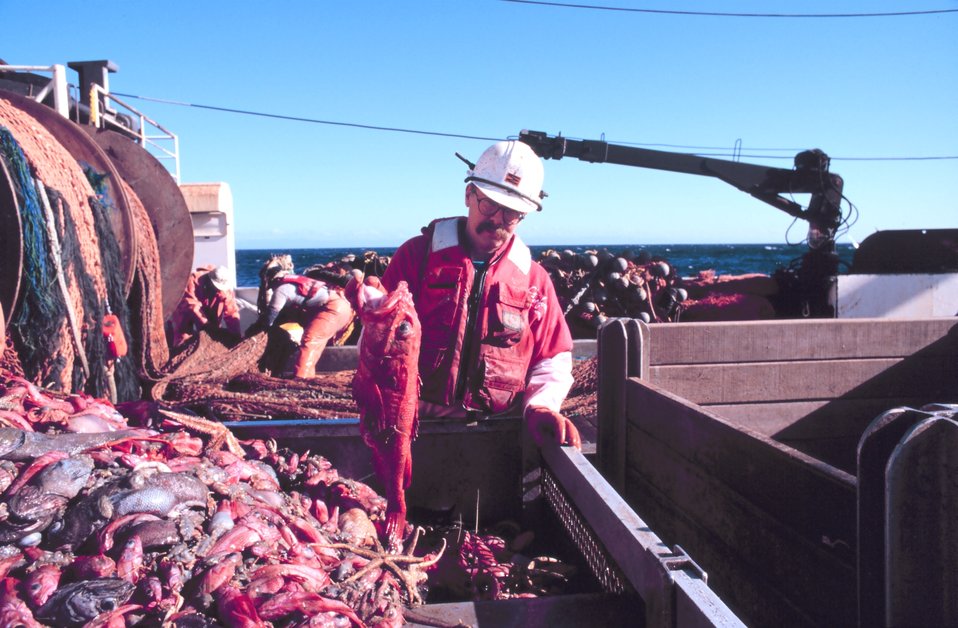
Scientist sorting the catch after being dumped in the checker from the cod end of the trawl.